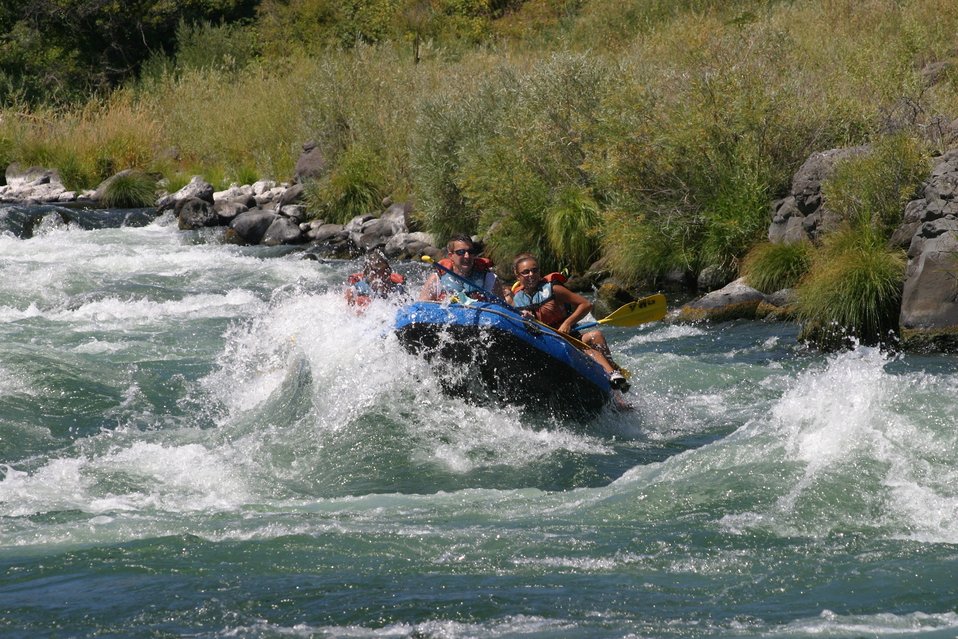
Wapinitia Rapids class III, has large roller coaster waves. 7/26/03 Pelton Dam 3600 cfs: Moody Rapids 4300 cfs.